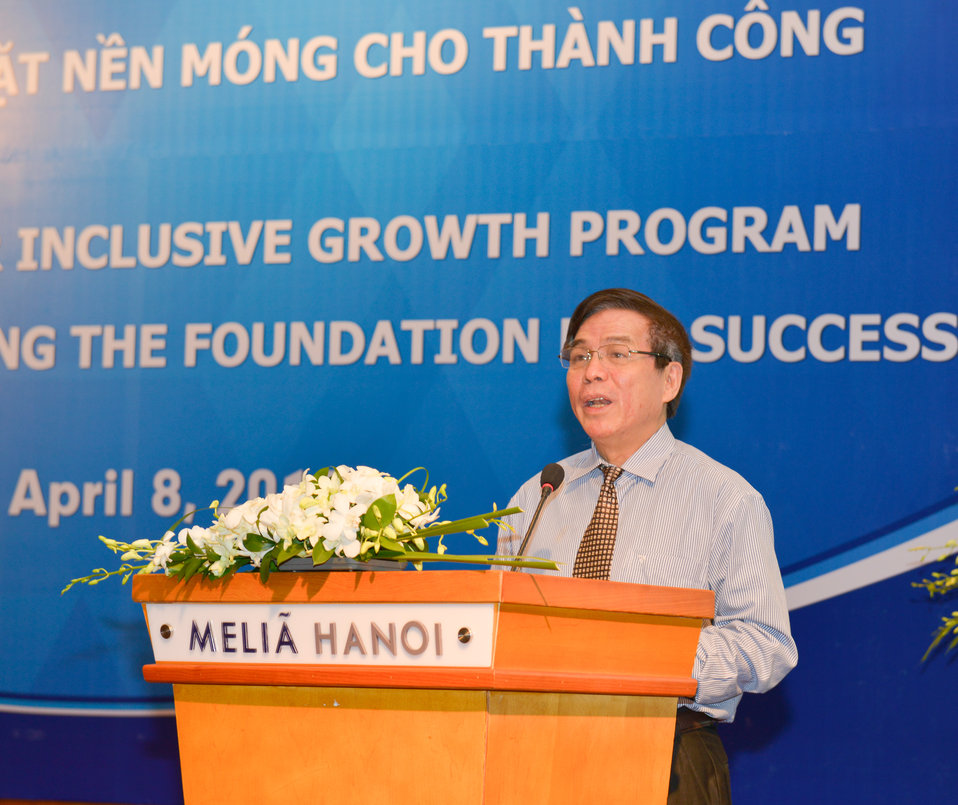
Vietnam’s Vice Minister of Justice Hoang The Lien speaks at the strategic kick-off workshop.

Hanoi, April 8, 2014.